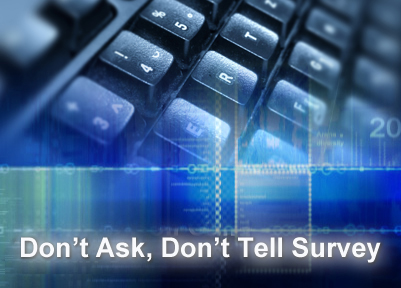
Don't Ask, Don't Tell